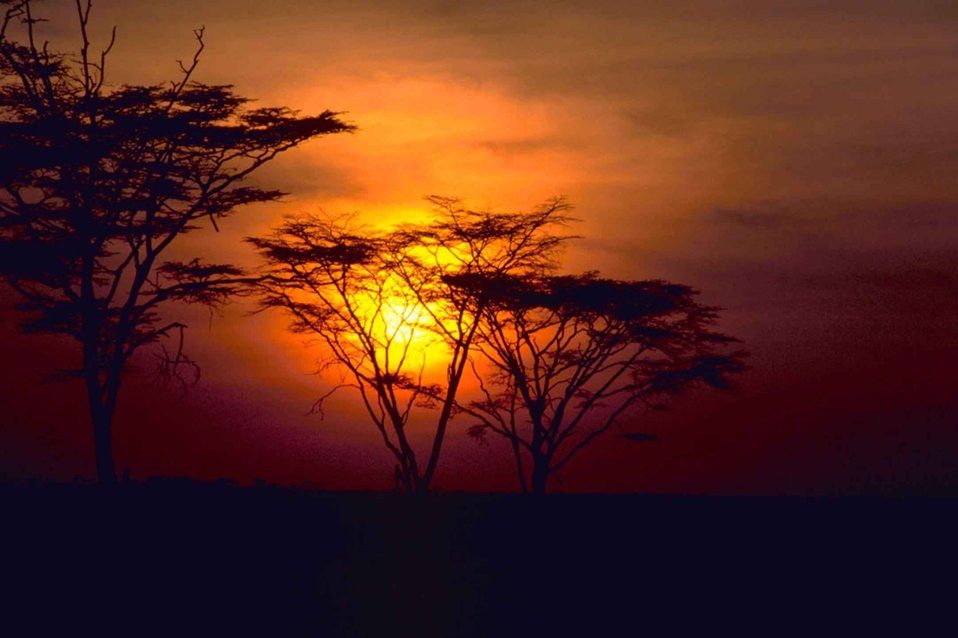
English:
Image title: Red beautiful African sunset Image from Public domain images website, http://www.public-domain-image.com/full-image/nature-landscapes-public-domain-images-pictures/sunset-public-domain-images-pictures/red-beautiful-african-sunset.jpg.html